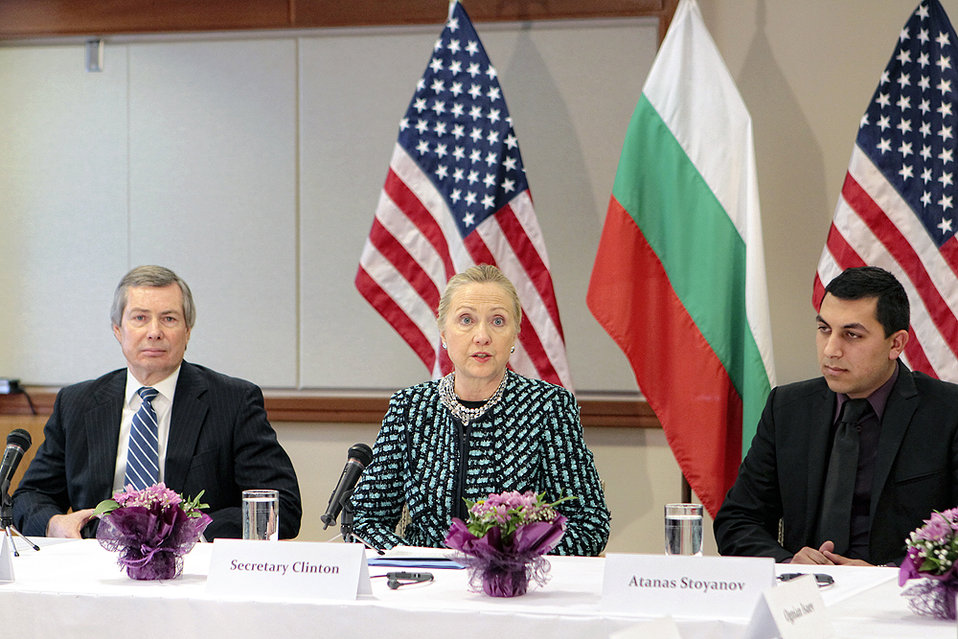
Secretary Clinton Meets With Young Roma Professionals and Roma NGO Leaders

U.S. Secretary of State Hillary Rodham Clinton, center; with U.S. Ambassador to Bulgaria James Warlick; left; meets with Young Roma Professionals and Roma non-governmental organization (NGO) leaders, including Atanas Stoyanov, right; in Sofia, Bulgaria, on February 5, 2012.